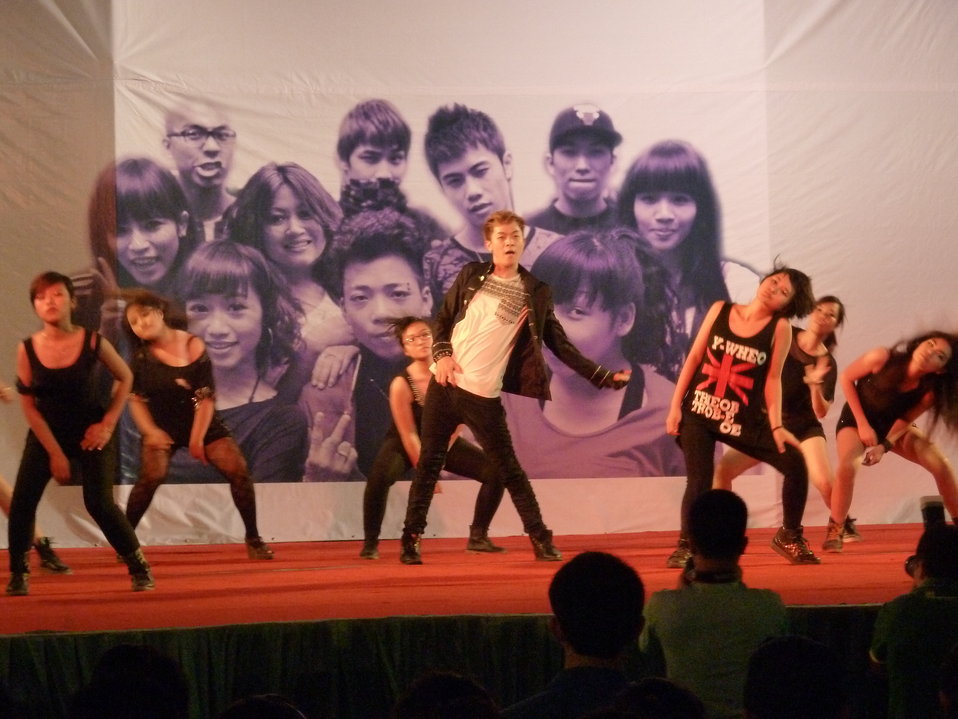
PEPFAR Sponsors Hip Hop to Stop the Spread of HIV